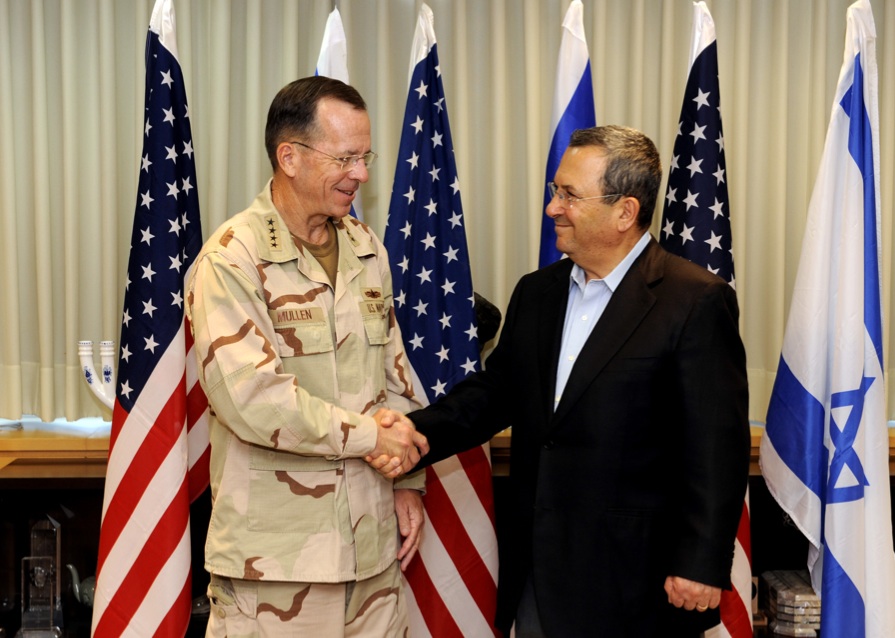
Admiral Mullen Shakes Hands With Israeli Defense Minister Barak

Chairman of the Joint Chiefs of Staff Admiral Michael G. Mullen shakes hands with Israeli Defense Minister Ehud Barak before their meeting at the U.S. Embassy Tel Aviv in Israel on June 27, 2010.